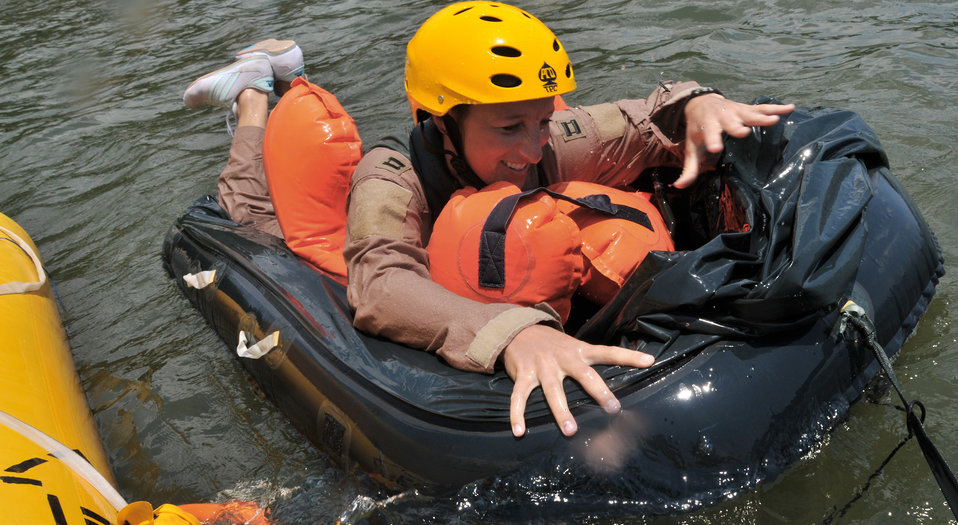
Water survival training course

Capt. Amber Jackson boards a one-man life raft during a water survival training course May 2, 2011, at Charleston Harbor, South Carolina. Captain Jackson is a pilot assigned to the 14th Airlift Squadron at Joint Base Charleston.